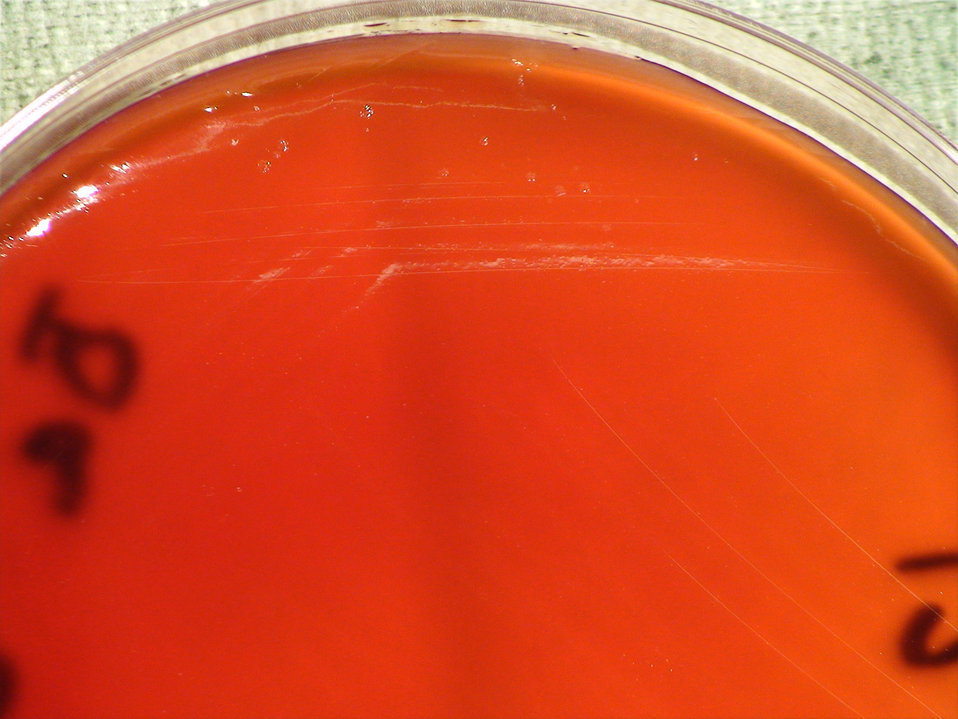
A closer view of PHIL 12388, this photograph depicts light colonial growth displayed by Gram-positive, Pasteur strain, Bacillus anthracis bacteria, which was grown on a medium of CNA agar, for a 24 hour time period, at a temperature of 37�C. B. anthrax is the bacterial pathogen, which causes the disease known as anthrax.